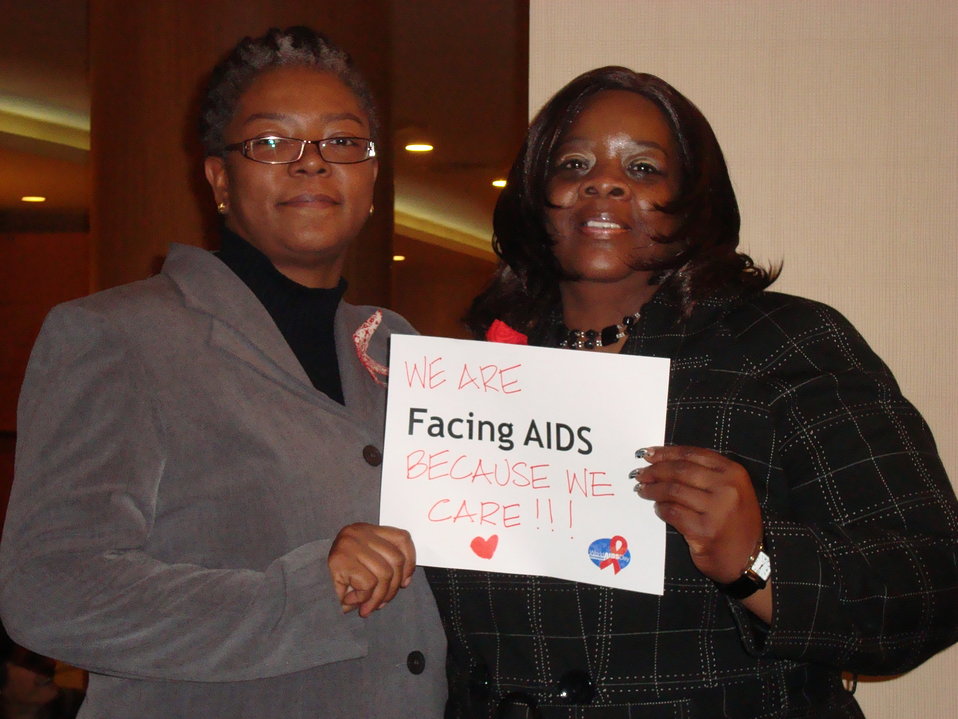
FacingAIDSCampaign 029